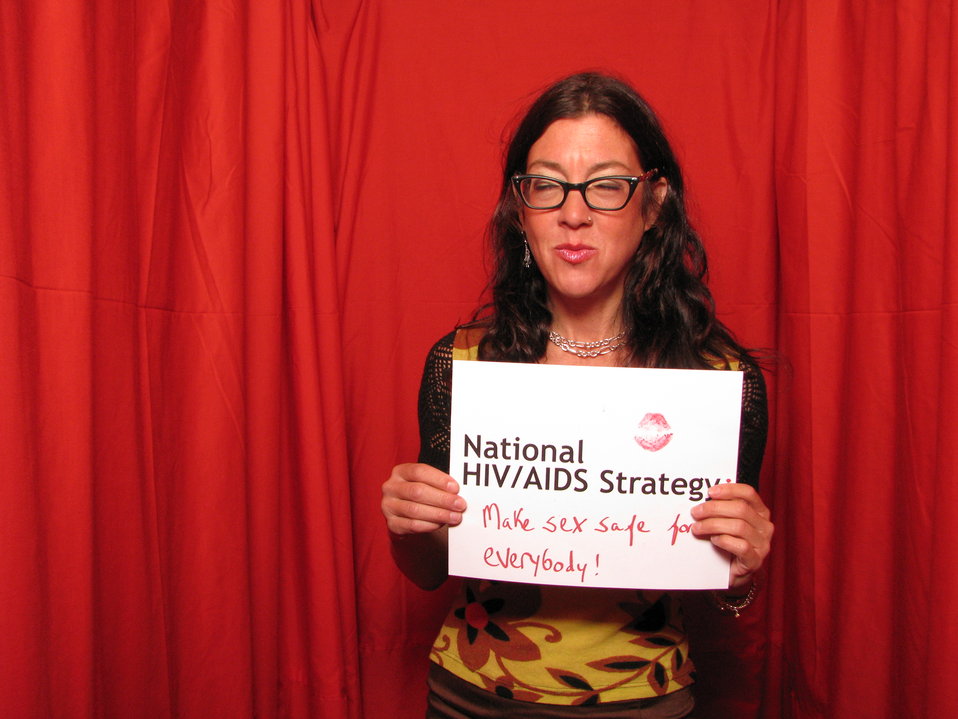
National HIV/AIDS Strategy: Make Sex Safe for Everybody!

From the AIDS.gov photo booth at the U.S. Conference on AIDS, September 2010 (Orlando, FL).